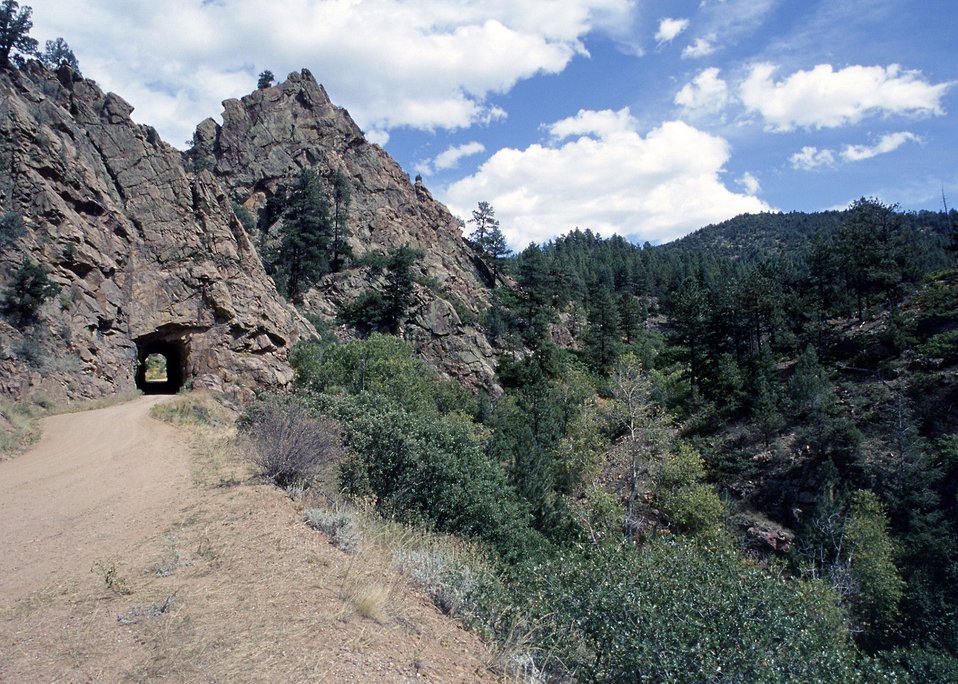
Upper Tunnel